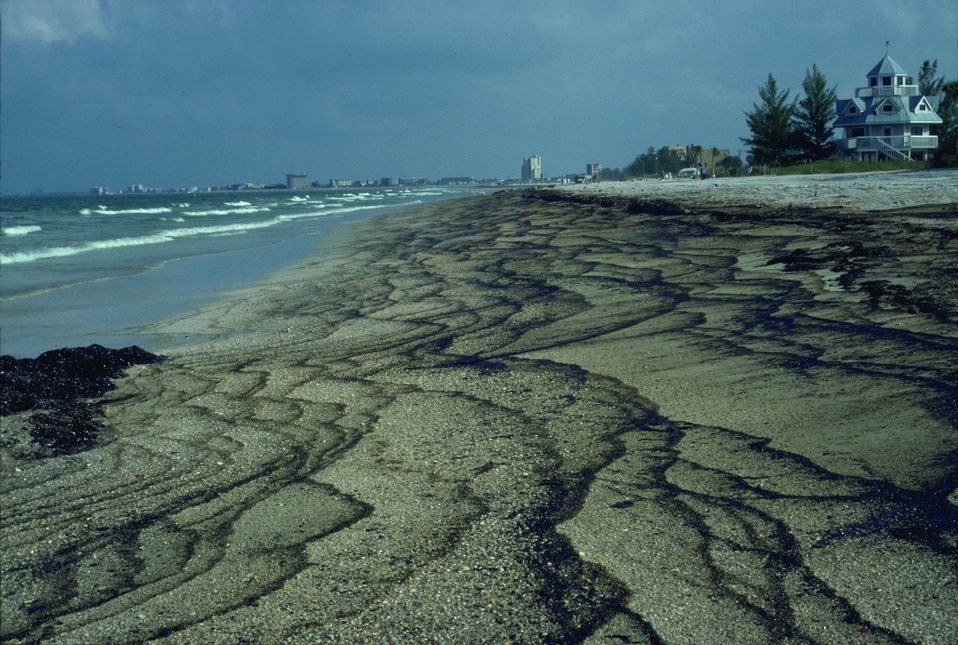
Oil washing up on beach